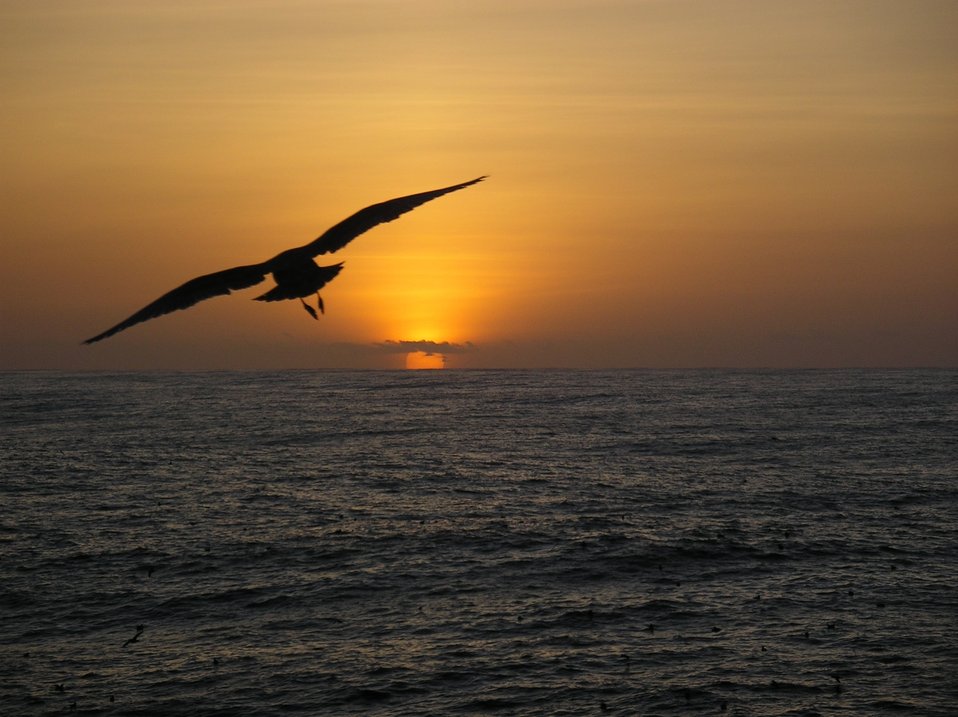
A sea bird observed flying towards the sunset during 2004 Pacifc Whiting Fishery survey.